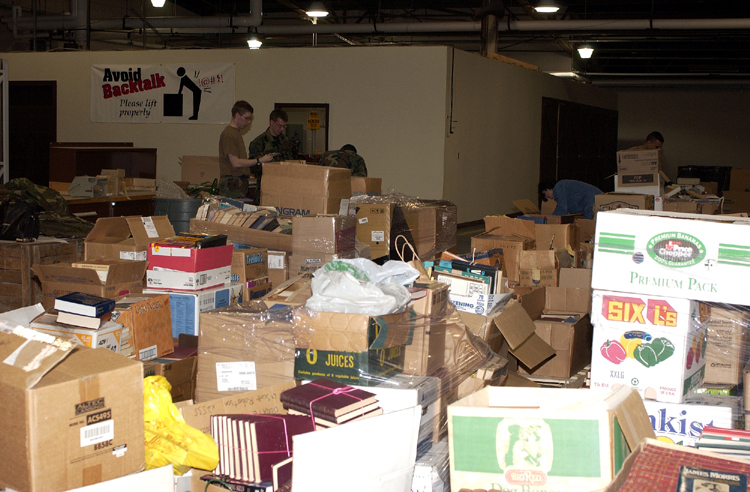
From Rome to Baghdad

ROME, N.Y. -- People from Air Force Research Laboratory's research site here and the local community donated nearly 5,000 books that will be sent to Baghdad University in Iraq. The university's library was destroyed during a firefight, and the few books left date back to the 1960s.